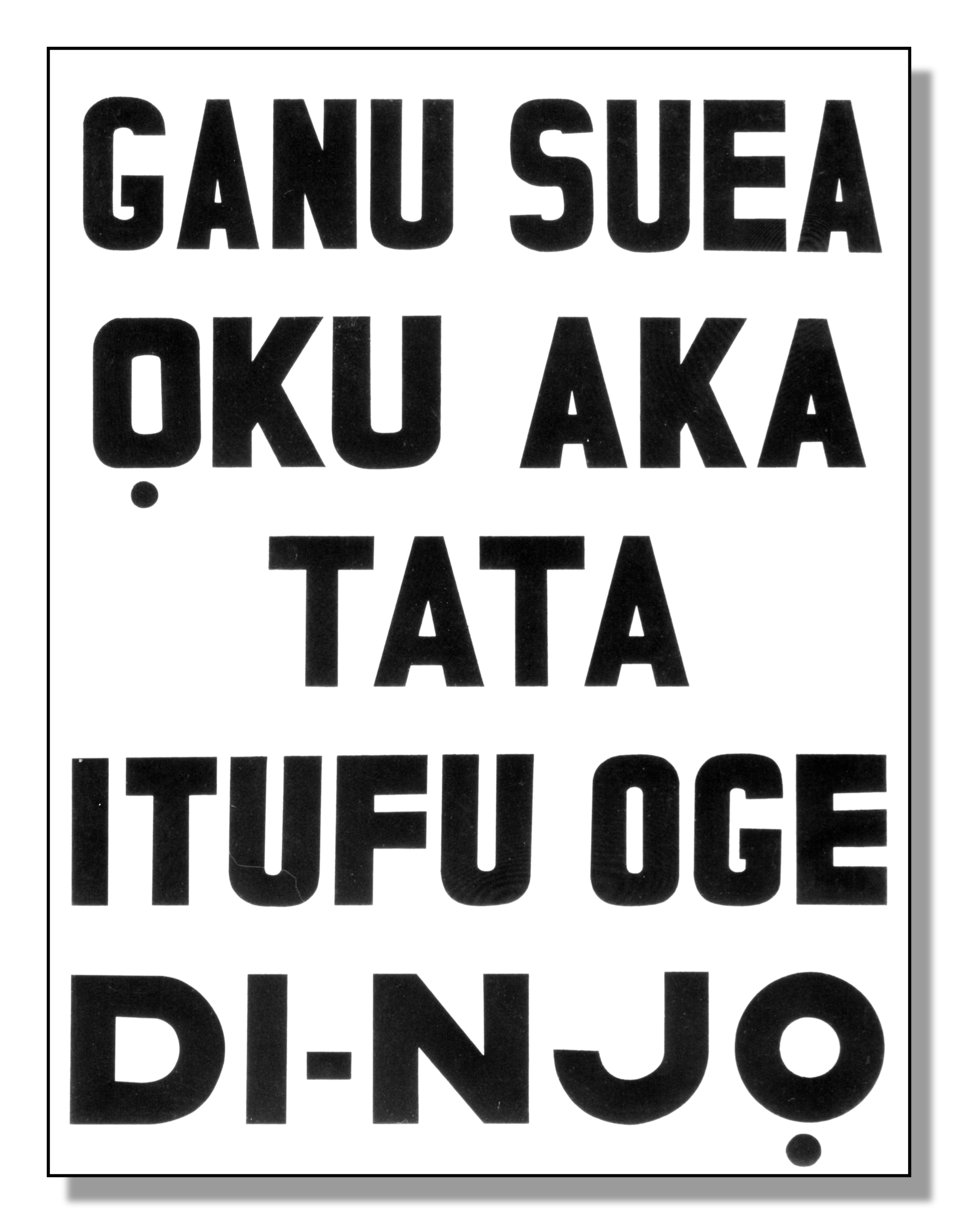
This poster was created prior to 1979 promoting the importance of Smallpox/Measles vaccination in foreign lands.